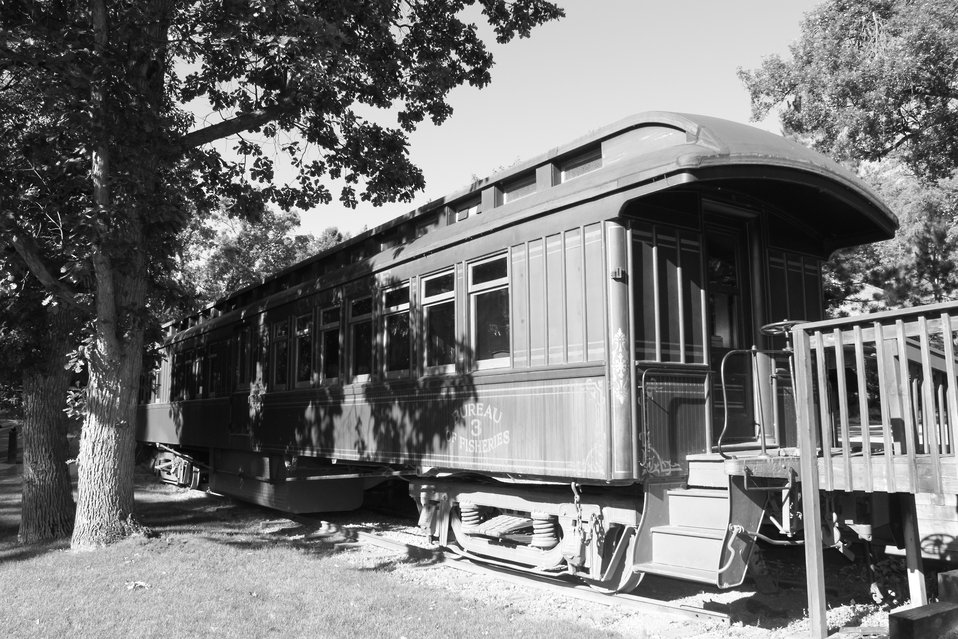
Fish Car in Black and White

This rail car has been restored to depict the work performed by fisheries professionals from years past. Fish cars moved fish over rail before the advent of tank trucks on modern highways. This car has come to rest at D.C. Booth Historic National Fish Hatchery & Archives in Spearfish, South Dakota. It is one of over 175,000 items cataloged in the archives.

Credit: Craig Springer / USFWS

Photo Contest Entry #145